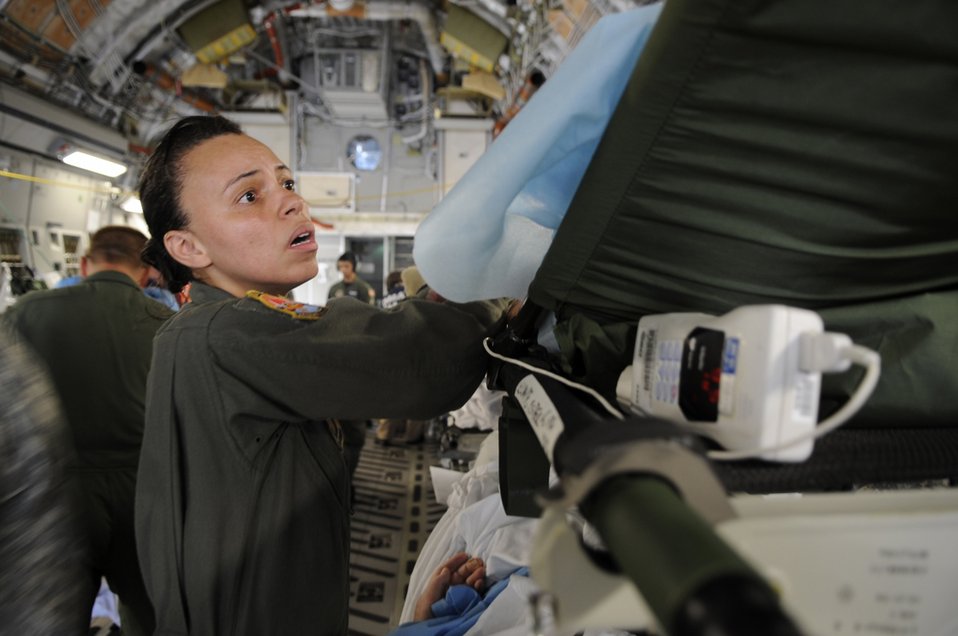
Hurricane Gustav

Senior Master Sgt. Frances Williams helps an evacuee of Hurricane Gustav board a flight Aug. 31 at Lake Front Airport in New Orleans. The Federal Emergency Management Agency and the Department of Defense chartered flights to transport citizens to destinations safely outside the hurricane's path.